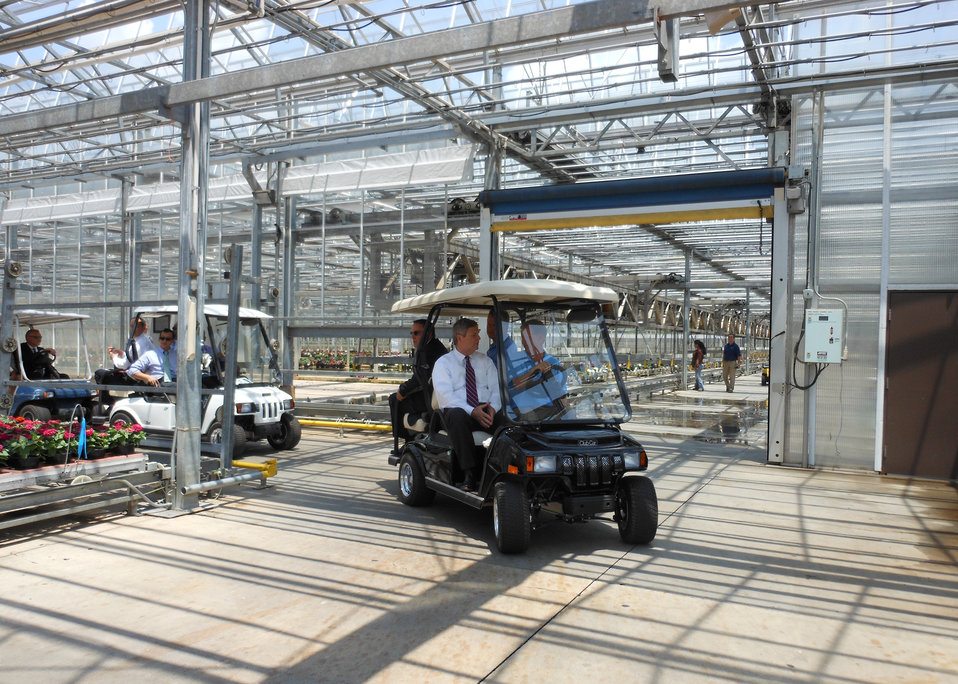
Agriculture Secretary Tom Vilsack tours through Metrolina Greenhouses in Huntersville, NC on Monday, June 25, 2012. Metrolina Greenhouses is a family-owned, wholesale plant and services company that started business in April 1972. It is the largest single-site heated greenhouse in the US at 162 acres under roof and approximately 30 acres of outdoor growing space.